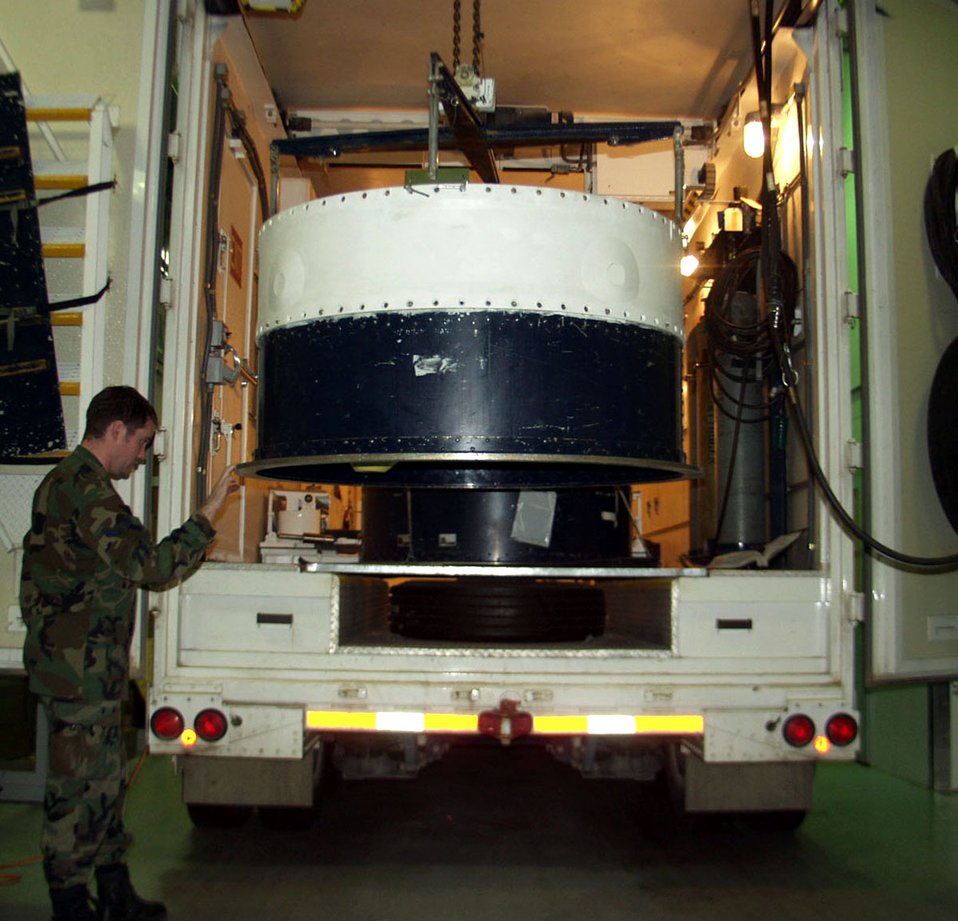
Malmstrom Airmen replace missile guidance systems

Senior Airman Clayton Creamer inspects the NS-20 guidance set as it comes out of the payload transporter Dec. 4 at Malmstrom Air Force Base, Mont. Base Airmen completed replacing the NS-20 missile guidiance set with the new NS-50. Airman Creamer is a 341st Missile Maintenance Squadron top side technician.